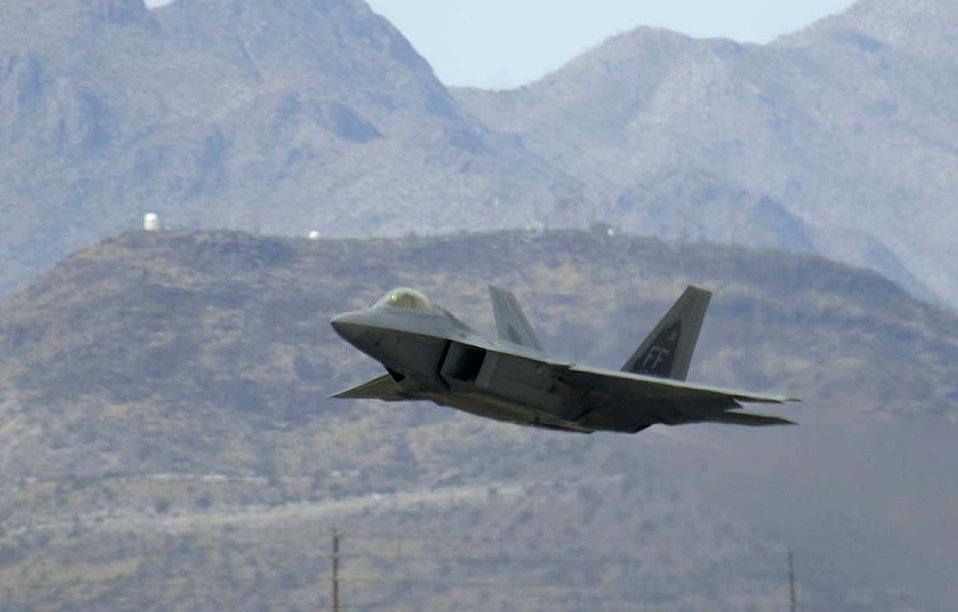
Heritage flight

An F-22A Raptor from Langley Air Force Base, Va., flown by Lt. Col. Michael Shower takes off Friday, March 3, 2006, at Davis-Monthan Air Force Base, Ariz., during the 2006 Heritage Conference. The conference involves today's state-of-the-art fighters flying in close formation with World War II and Korean War vintage fighters. The flight is designed to safely display the evolution of U.S. Air Force airpower and support Air Force's recruiting and retention efforts.